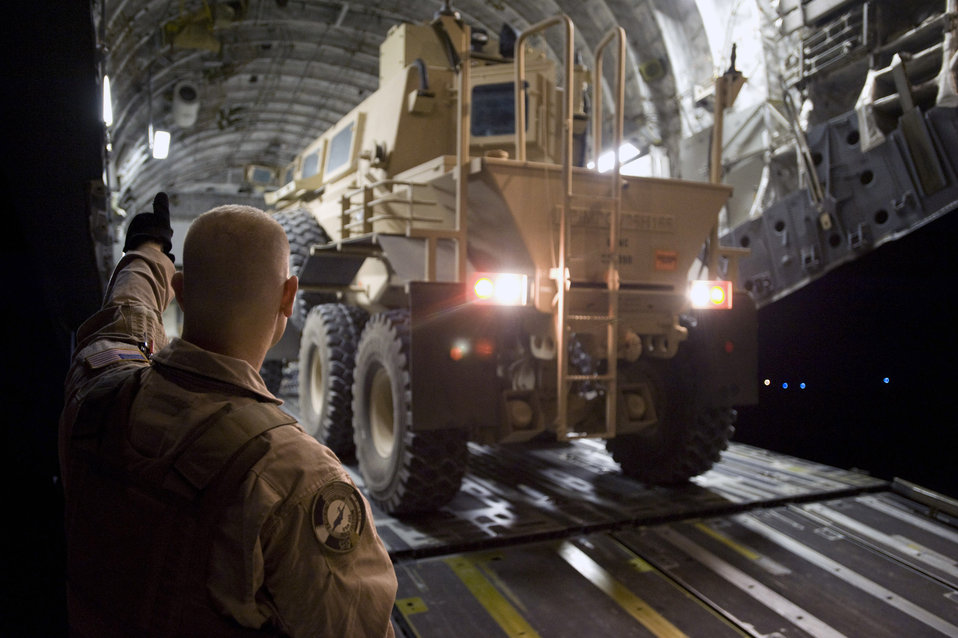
Keep a straight line…

Senior Airman Justin Volksman guides a mine-resistant route clearing vehicle from a C-17 Globemaster III at Camp Bastion, Afghanistan. Airlift to get vehicles that can withstand improvised explosive devices has become a priority for the aircrews.